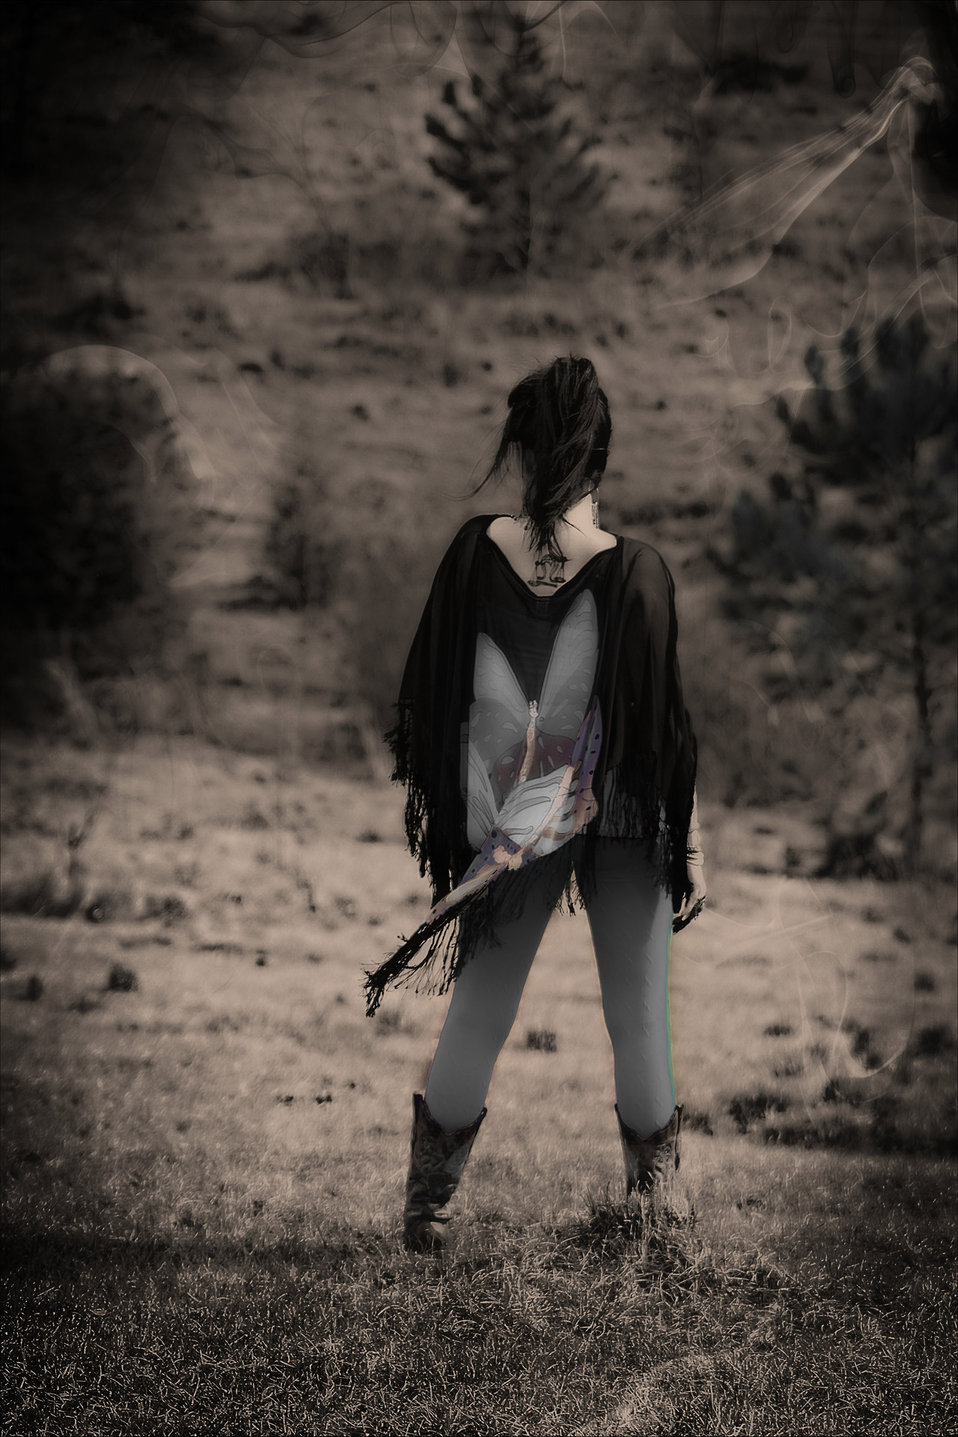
Girl on farm.